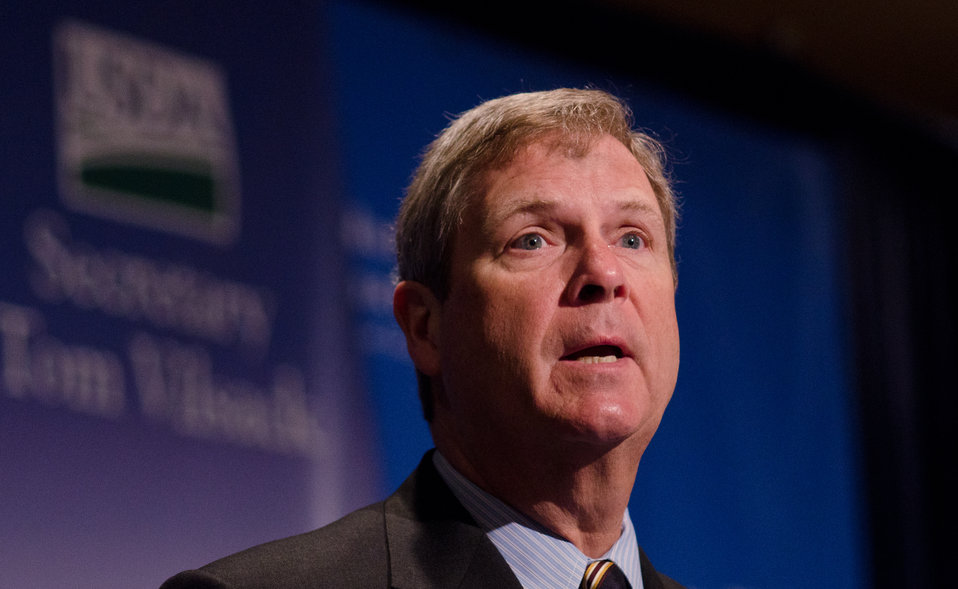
U.S. Department of Agriculture Secretary Tom Vilsack spoke with and took questions during the School Nutrition Association’s closing general session of their 39th annual Legislative Action Conference at the J.W. Marriott Hotel in Washington, D.C., on Wednesday, March 9, 2011. The theme of the Secretary Vilsack’s speech was “The Realities of Implementing New Meal Patterns and Operational Requirements.” Of the many things he spoke about, he also shared with the audience how his motivation came from how personally important it was to him, that his adopted mother made a lunch for him everyday he went to school despite the challenges of her alcoholism and family struggles.